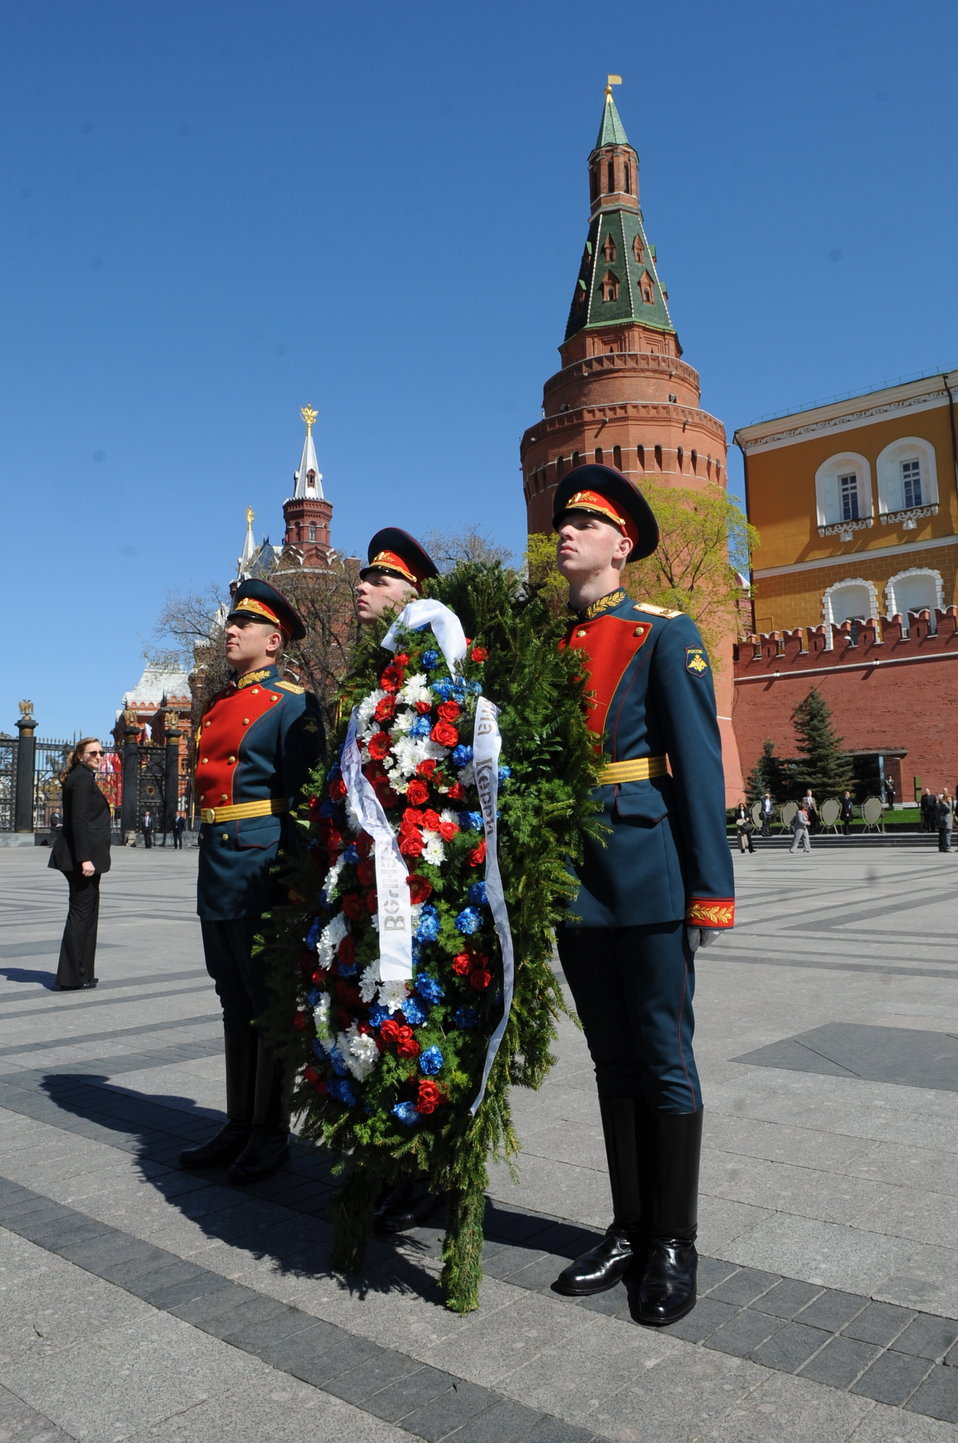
Wreath Laying at the Tomb of the Unknown Soldier

Russian honor guards await U.S. Secretary of State John Kerry before he lays a wreath at the Tomb of the Unknown Soldier in Moscow, Russia, on May 7, 2013.